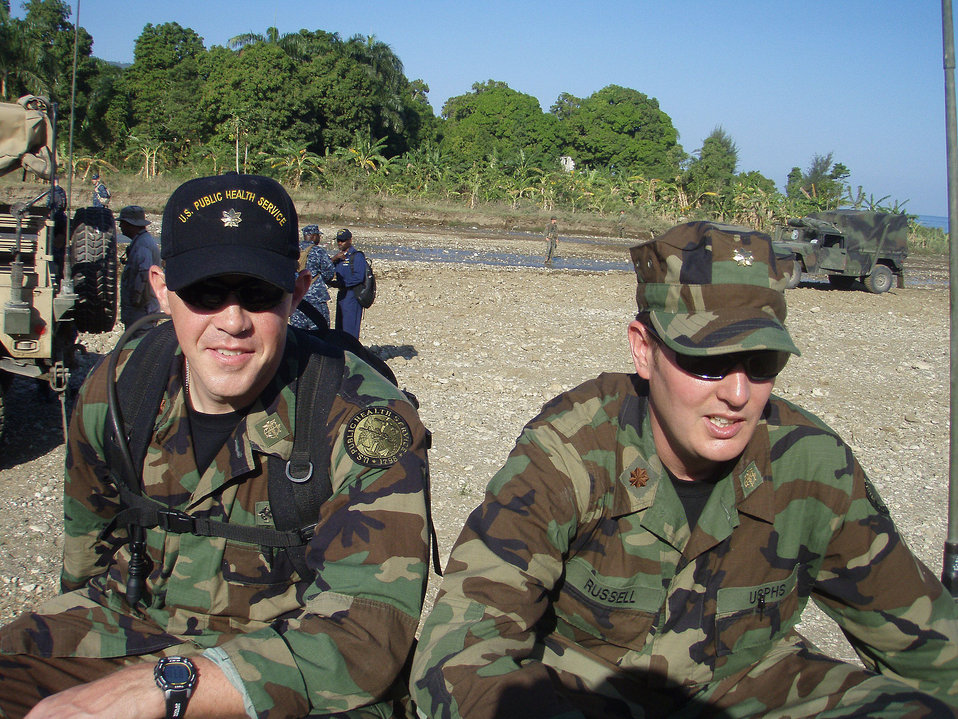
Photographed by U.S. Public Health Service (USPHS) Lt. Cmdr. Gary Brunette, this image depicts two USPHS officers as they were inspecting the damage in a Haitian town shortly after the country's devastating earthquake in January, 2010, after having been transported to the region by the Navy's Wasp-class amphibious assault ship, the USS Bataan.